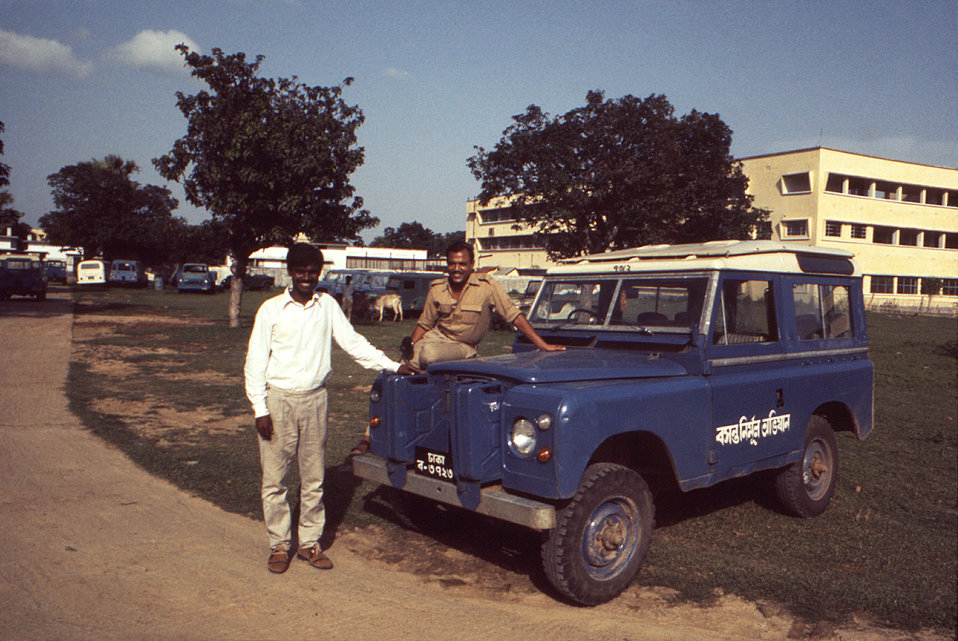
Photographed sometime in the early 1970s, during the worldwide smallpox eradication campaign, this image depicted two public health officials and their jeep transport parked outside the smallpox headquarters located in Dacca, the capital city of Bangladesh.The Smallpox Vaccine